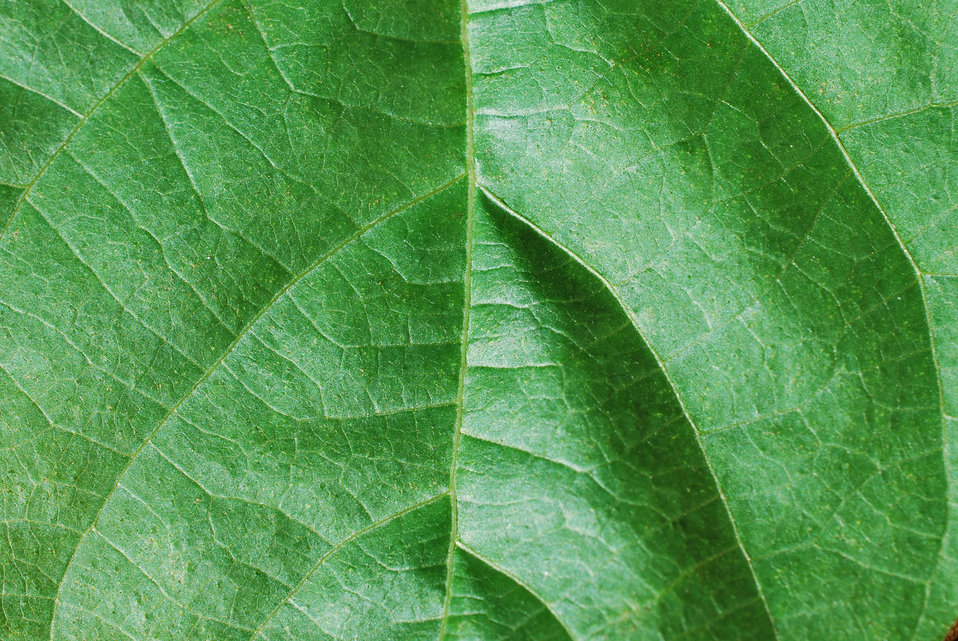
Leaf background

Nice green leaf background.